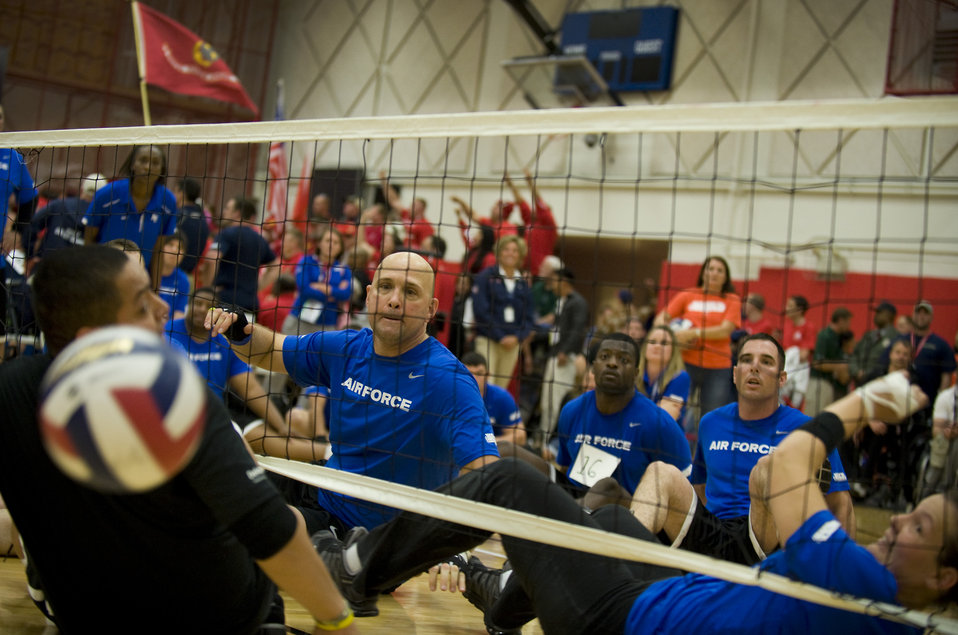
Army marches through Air Force

Members of the Air Force sitting volleyball team watch as they score a point against the Army May 19, 2011, during the the second annual Warrior Games in Colorado Springs, Colo. The Army won the series with two straight games.